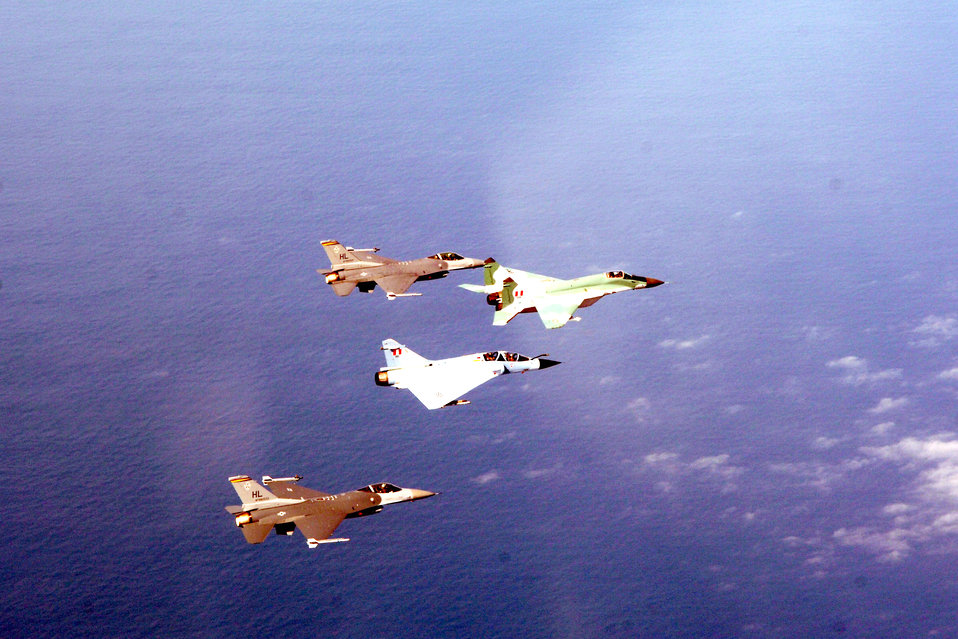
Airmen work alongside Peruvian military during joint exercise

Two F-16 Fighting Falcons form up with a Peruvian MiG-29 and Mirage 2000 during dissimilar air combat training Feb. 15 as part of Falcon and Condor 2007, a joint exercise between the U.S. and Peruvian Air Forces. The exercise allows the U.S. military to build relationships with military and civilian leaders of Peru. The F-16s are from the 34th Fighter Squadron at Hill Air Force Base, Utah.